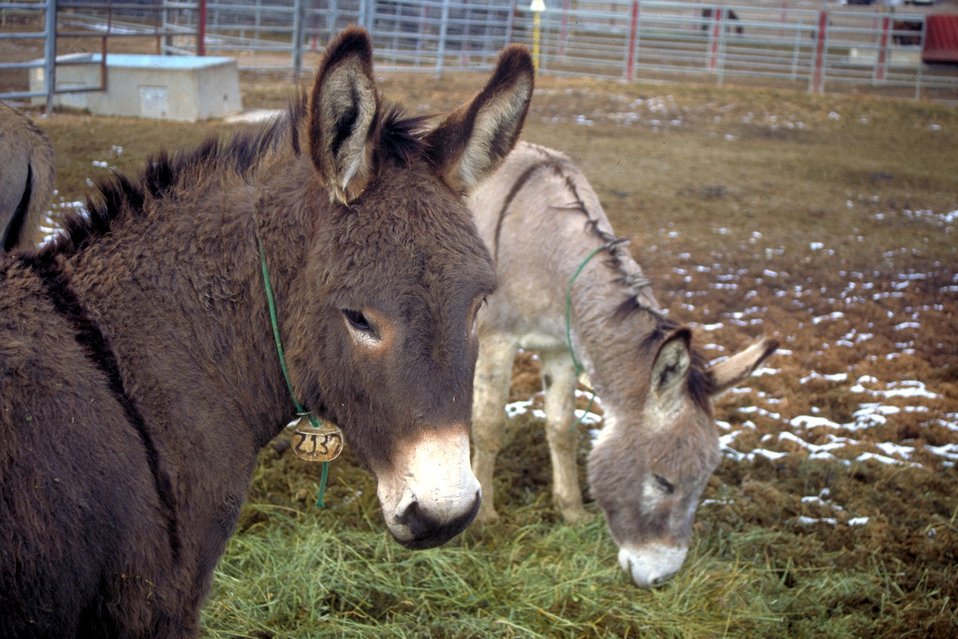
Salt Lake Regional Wild Horse and Burro Center Butterfield Canyon.